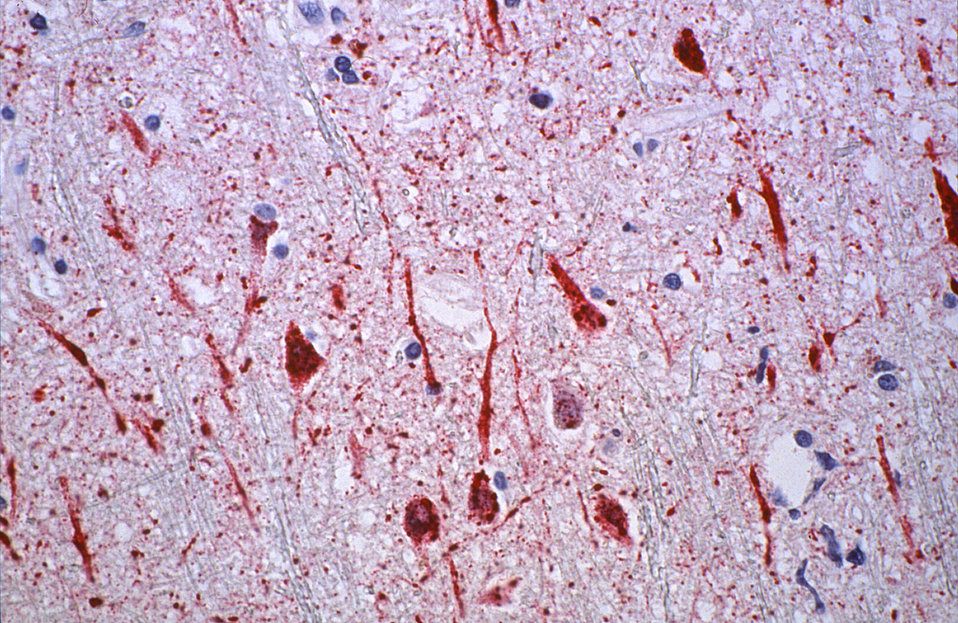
Using immunohistochemical (IHC) technique, this photomicrograph is from a human central nervous system (CNS) tissue specimen, which revealed some of the cytoarchitectural histopathologic changes associated with a Nipah virus infection.